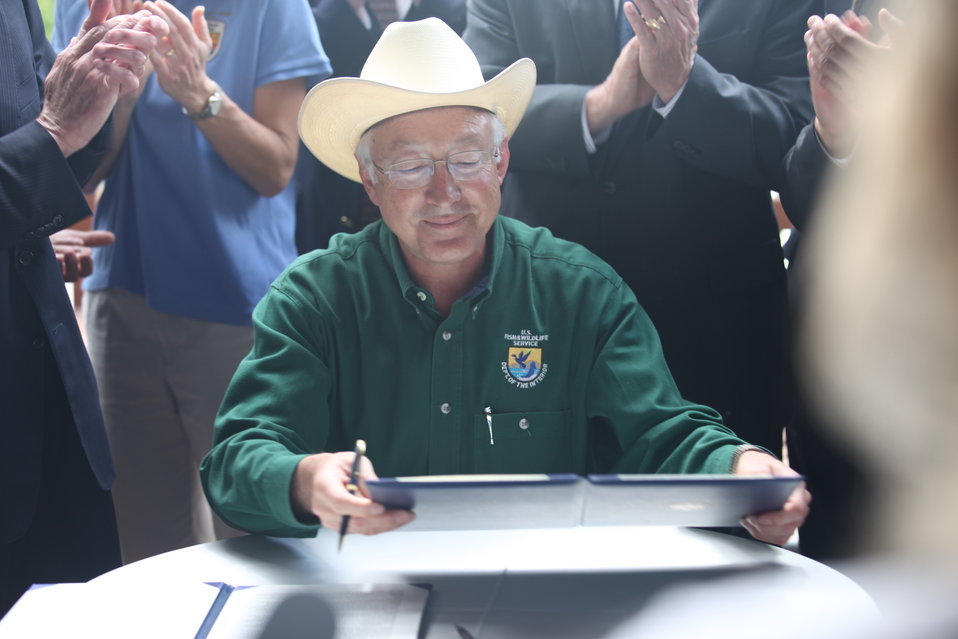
Ken Salazar happy signing

Secretary of the Interior Ken Salazar signs National Blueway designation for the Connecticut River. The U.S. Fish & Wildlife Service Silvio O. Conte National Fish & Wildlife Refuge spans the length of the river (410 miles).
The Connecticut River is the first in the nation to be designated a Blueway.